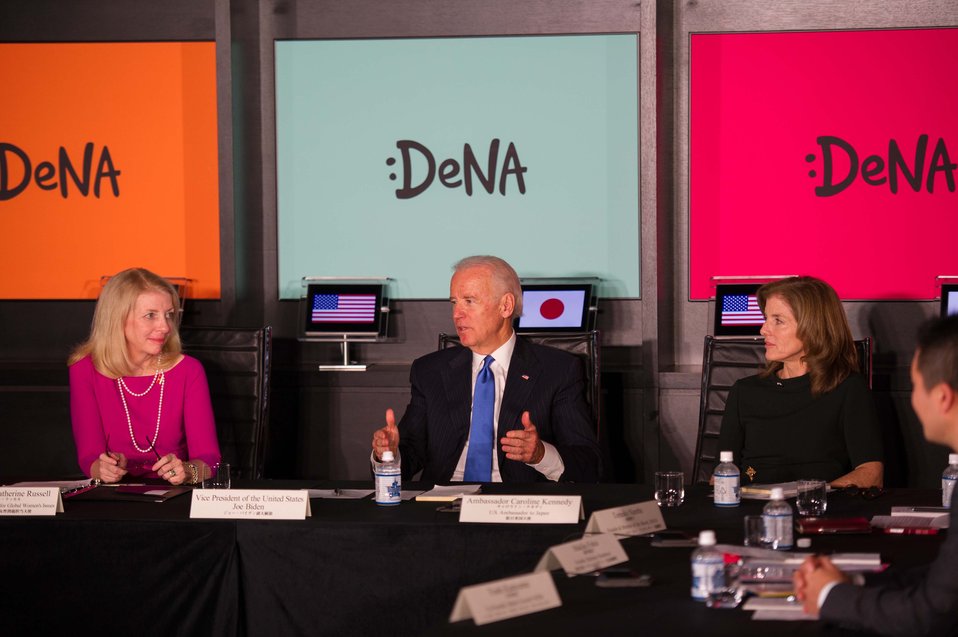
Vice President Biden Participates in a Discussion on Women’s Role in the Economy

Vice President Joseph Biden, with Ambassador-at-Large for Global Women’s Issues Catherine Russell and U.S. Ambassador to Japan Caroline Kennedy, participates in a roundtable discussion on women’s role in the economy at DeNA, a Tokyo-based tech company, in Tokyo, Japan, on December 3, 2013.